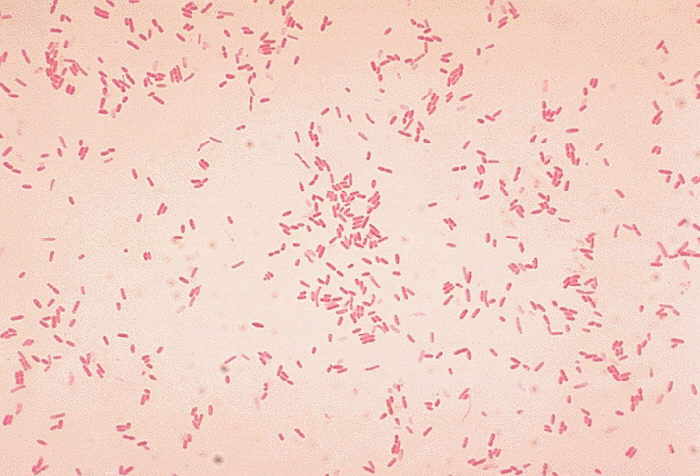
Aeromonas hydrophila. Gram stain.